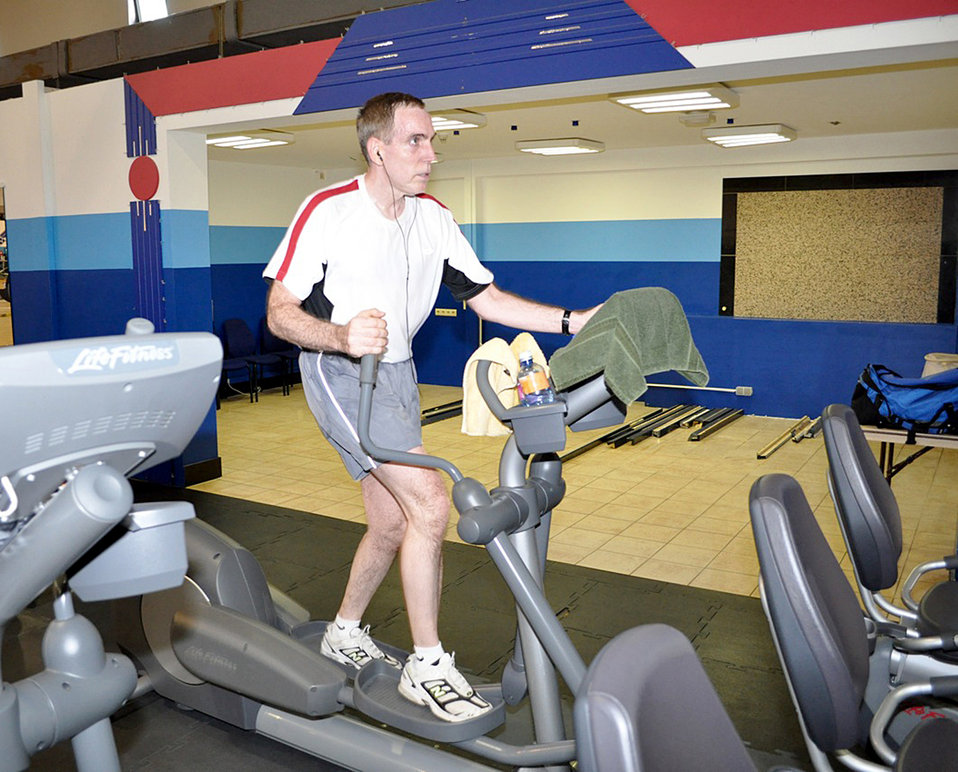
Elliptical marathon

Col. Joseph Mastrianna is in the zone during his five-hour elliptical marathon June 4, 2010 at Ramstein Air Base, Germany. He